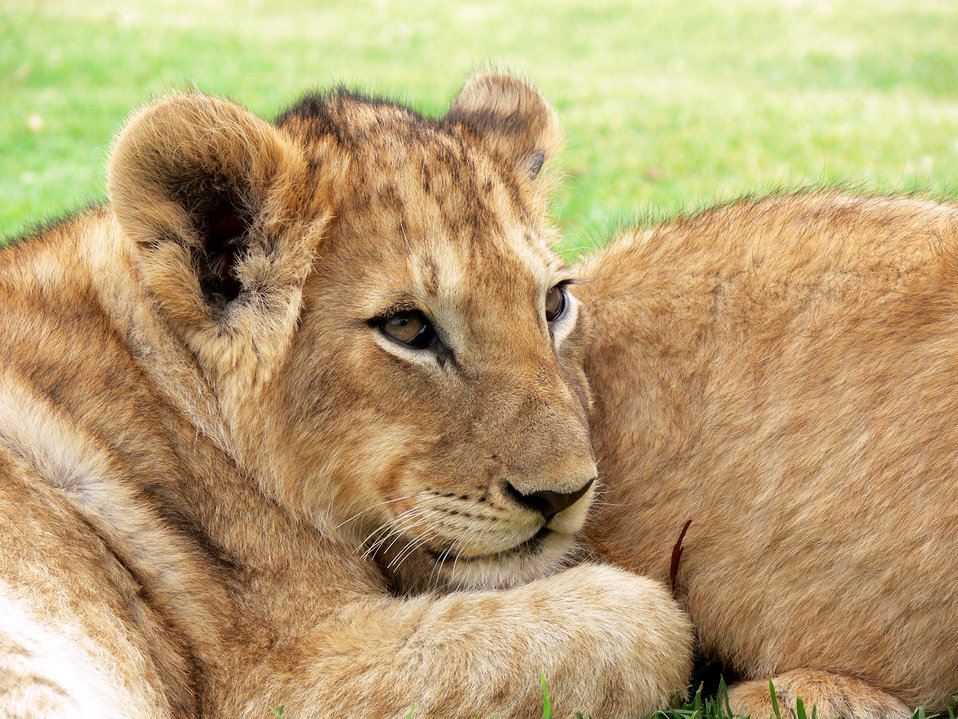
Young lion cub

Four month old lion cub cuddled up with other cubs.